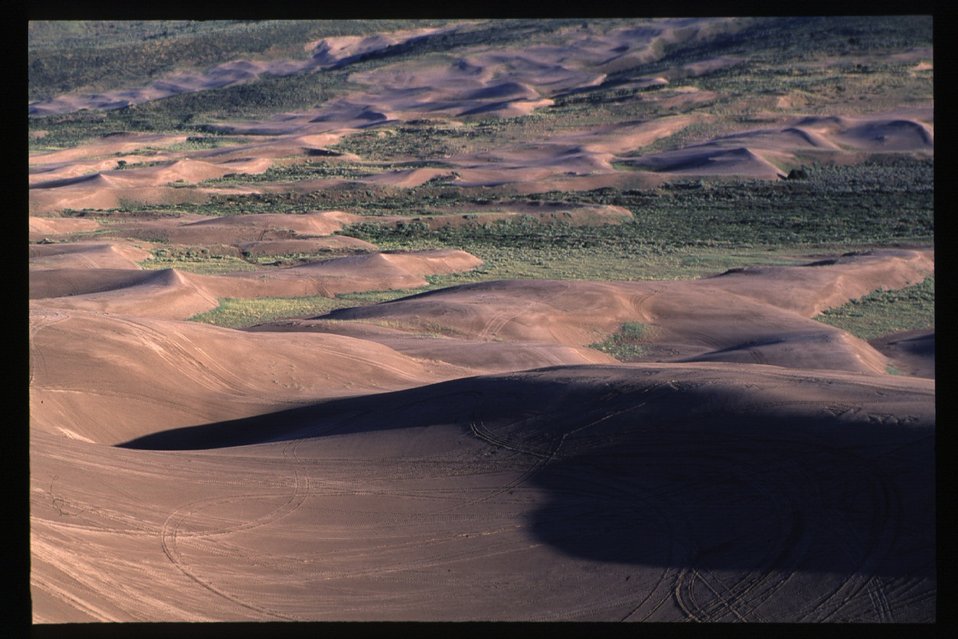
Recreation St Anthony Sand Dunes overview Idaho Falls Field Office USRD Upper Snake River District